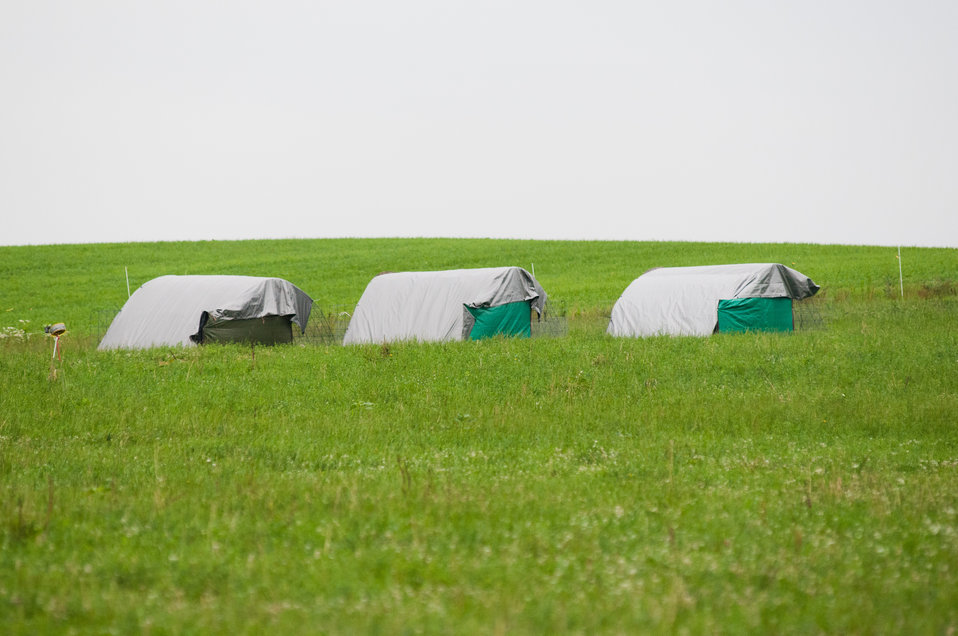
Broiler chickens and turkeys graze on organic pastures and live in pens that protect them from predators, direct sun light, and wind at Nick’s Organic Farm, owned by Nick Maravell in Adamstown, MD on Friday, July 12, 2013. The enclosures are light enough to be moved by hand, each day, one consecutive section at a time. The grazing trail can be seen behind the wire enclosure. This allows the pasture to easily recover from the grazing (just beyond the grazed area is the recovering grazing path a few weeks earlier). Organic grains and water are also in the enclosures. The farm produces Black Angus beef, chicken, turkey, eggs, hay, soybeans, corn, alfalfa, orchard grass, rye; and other crops. The cattle are100% grass-fed receiving certified organic pasture, certified organic hay (in winter), water and mineral salts mixed with sea kelp. The cattle are not fed hormones, antibiotics or animal products. Poultry feed from grain is ground from organic grain. The poultry also graze on organic pastures. The farm has conducted on-farm research with federal, state and non-profit agencies to refine organic practices.